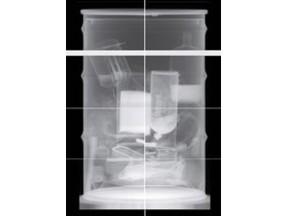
Savannah River National Laboratory

Work at the Savannah River National Laboratory, located in South Carolina, has led to many advances in cleanup efficiency. Using digital radiography, the contents of this 55-gallon waste drum are easily inspected--digital radiography eliminates the need for film and the waste stream that is associated with existing x-ray systems, while at the same time reducing processing time and enhancing the ability to store, retrieve and use the data.